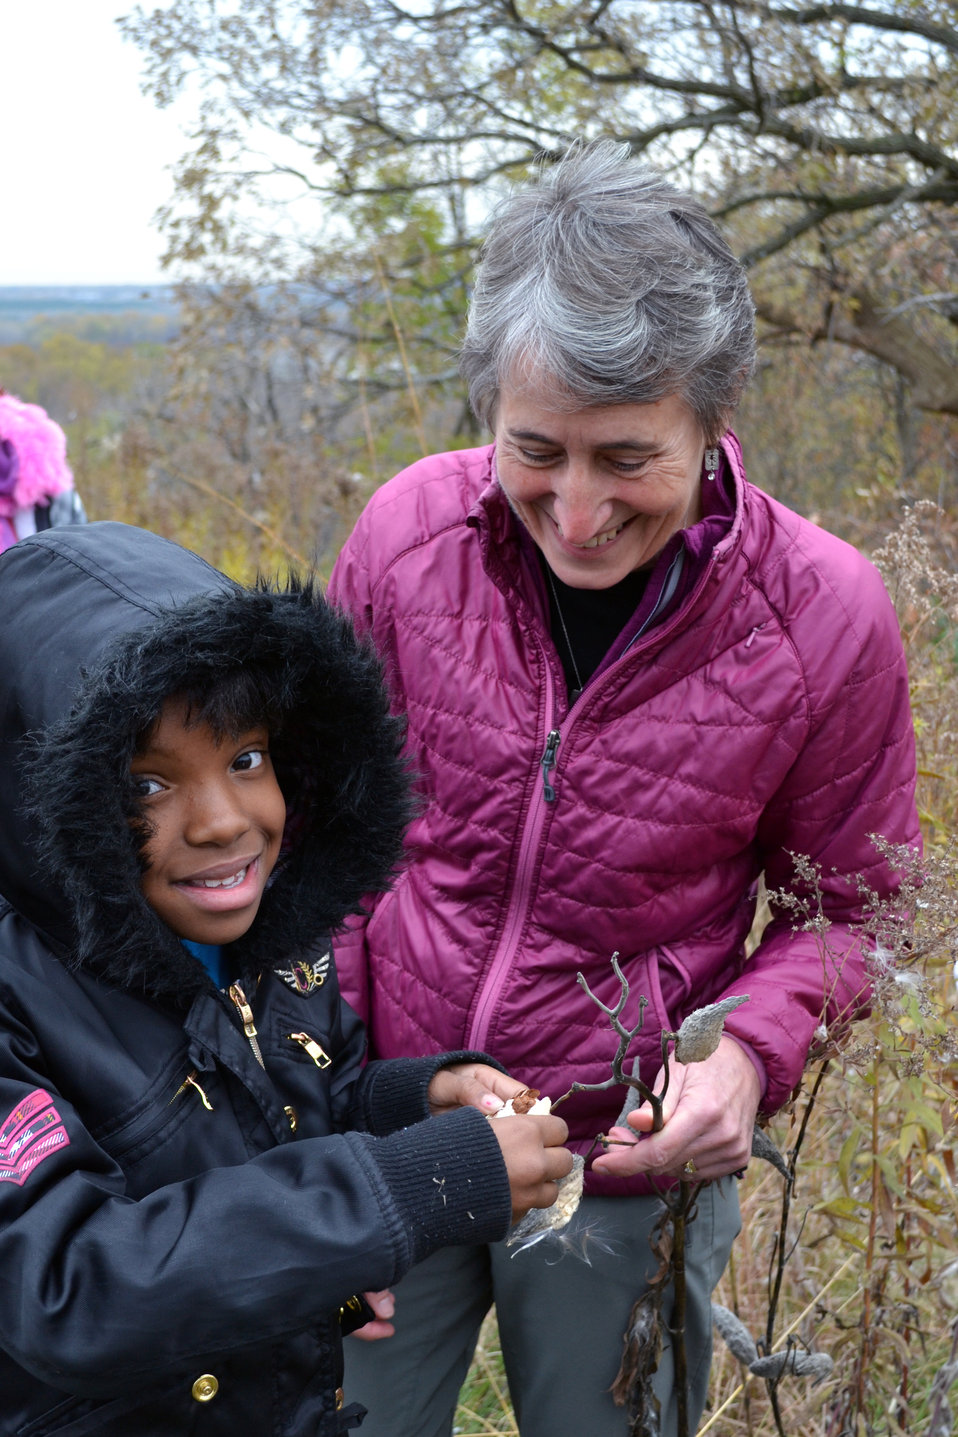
Prairie Seed Collection

Secretary Sally Jewell helped Minneapolis second graders collect native prairie seeds during her visit to Minnesota Valley National Wildlife Refuge.